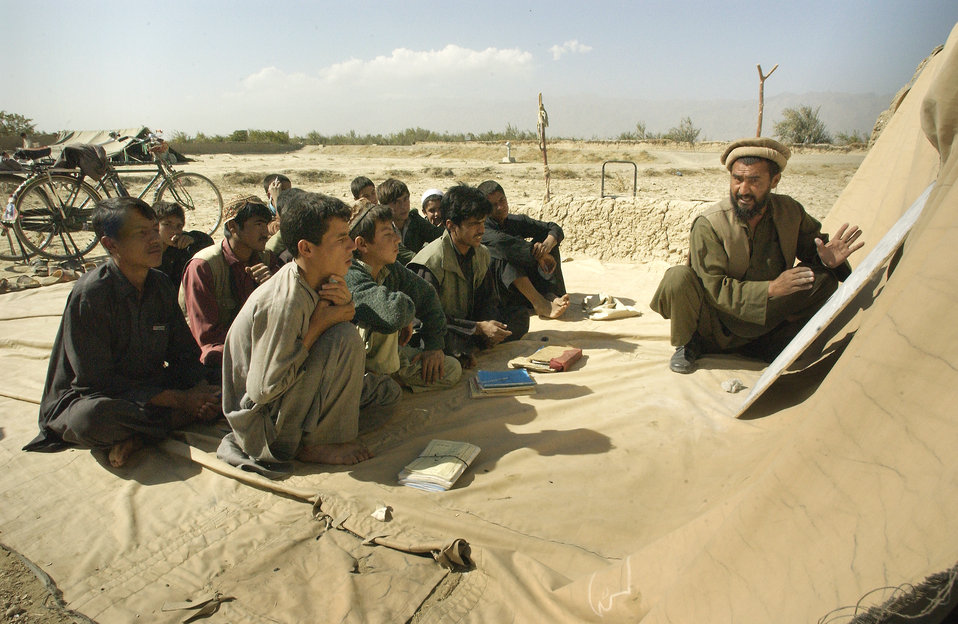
Studying hard

BAGRAM, Afghanistan -- A math teacher props his board against a mud wall to teach older Afghan boys. Whenever the winds blow, or it rains, school is cancelled. On Oct. 19, airmen delivered an old eight-section tent that will serve as a new school for the children.